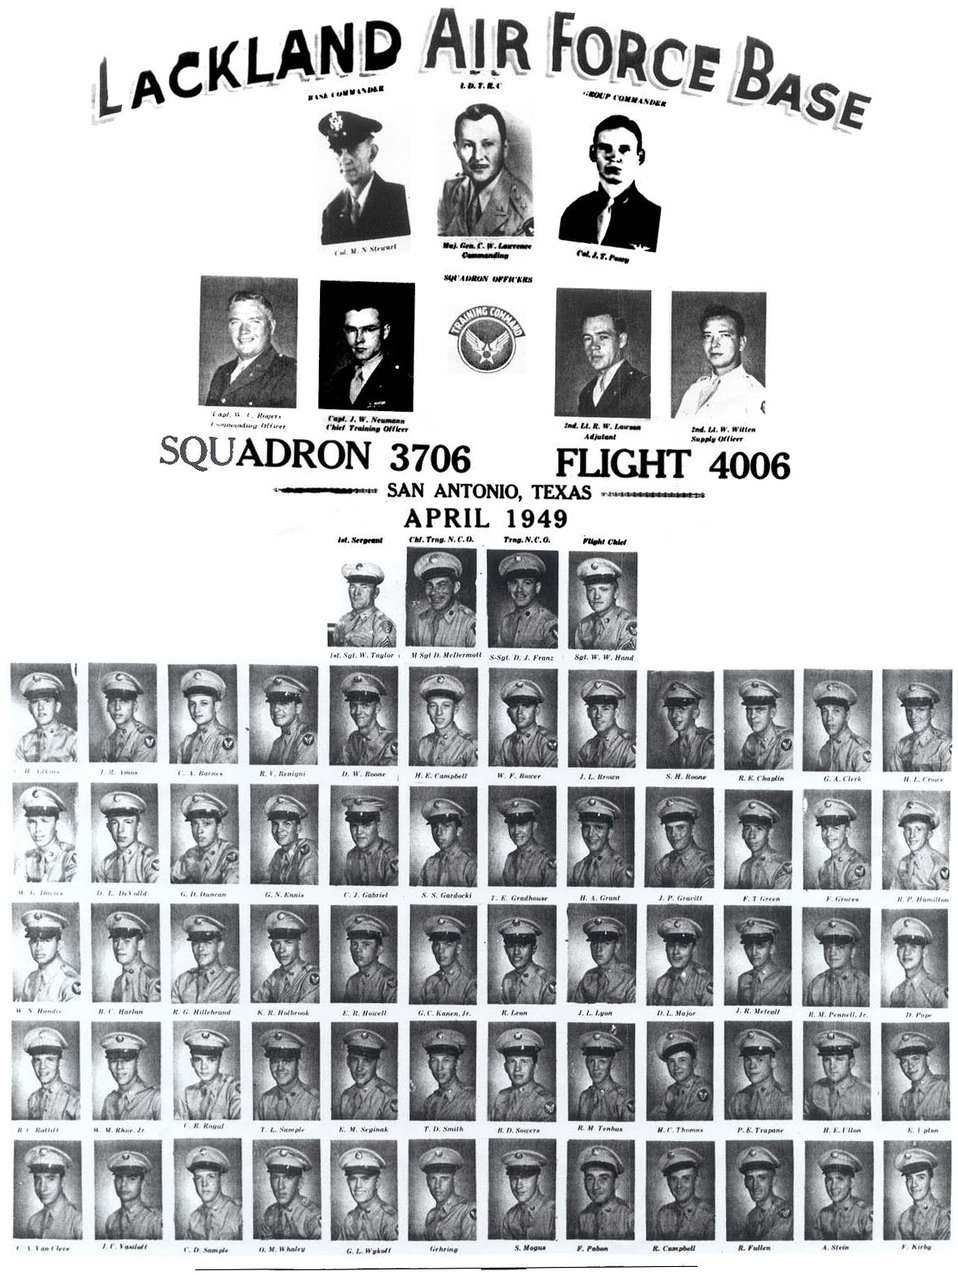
History project seeks basic-training photos